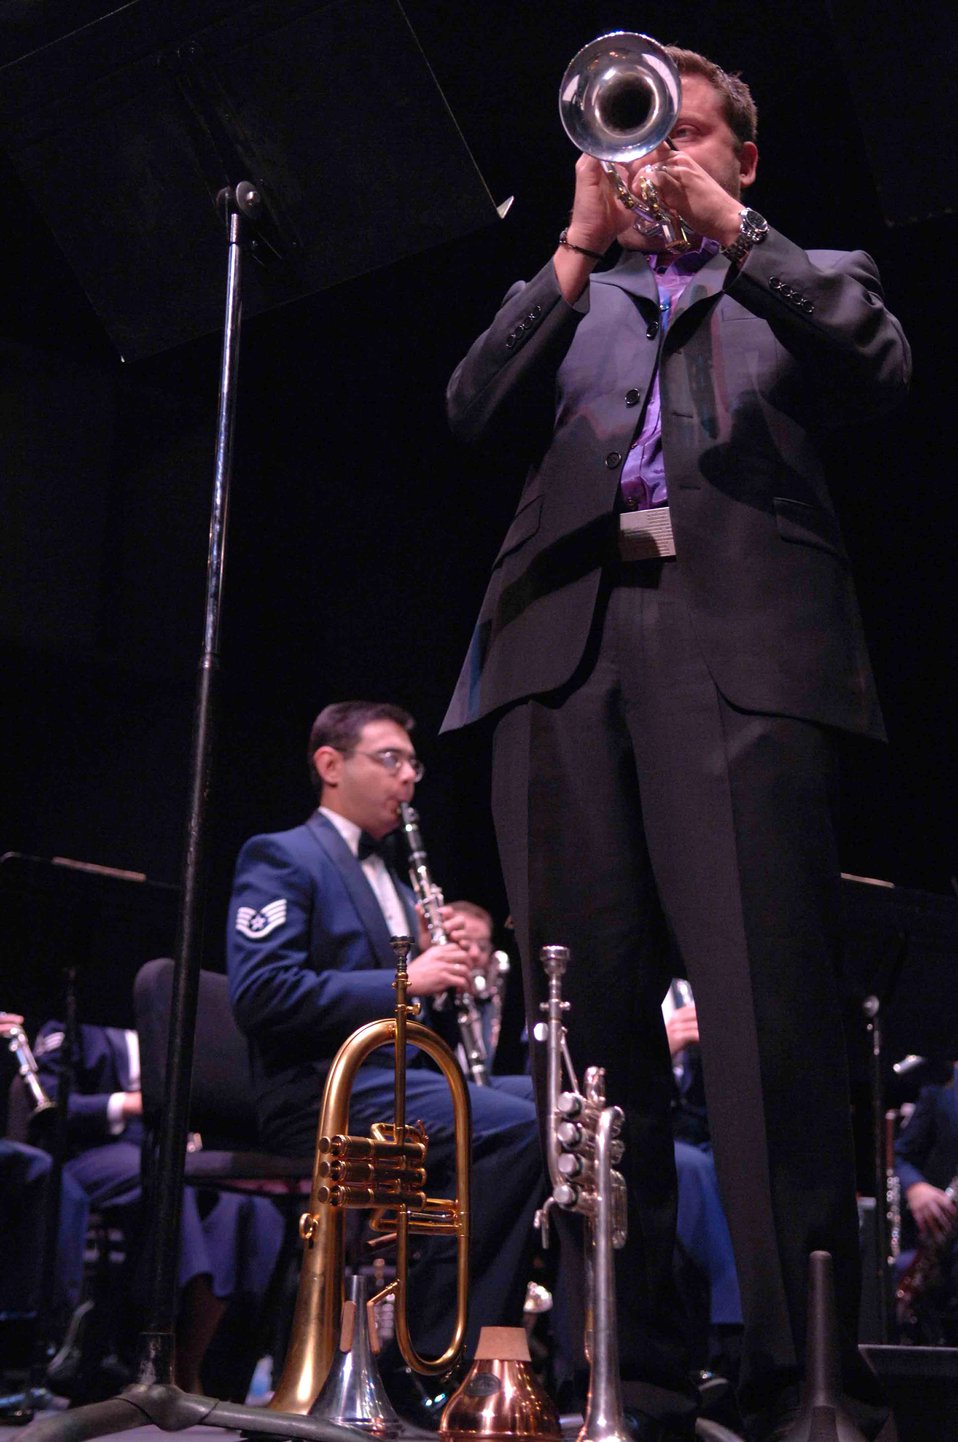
Music to their ears

A member of the Boston Brass performs alongside the Air Force Band of the Golden West during an Oct. 17 performance at the University of Nevada Las Vegas . The Band of the Golden West, from Travis Air Force Base, Calif., is the only active duty Air Force band west of the Rocky Mountains. They are scheduled to perform five free concerts in the Las Vegas community. The band supports 10 active duty Air Force bases, five Air Force Reserve wings and five recruiting squadrons in California, Washington, Oregon, Idaho and Nevada with more than 500 annual performances.